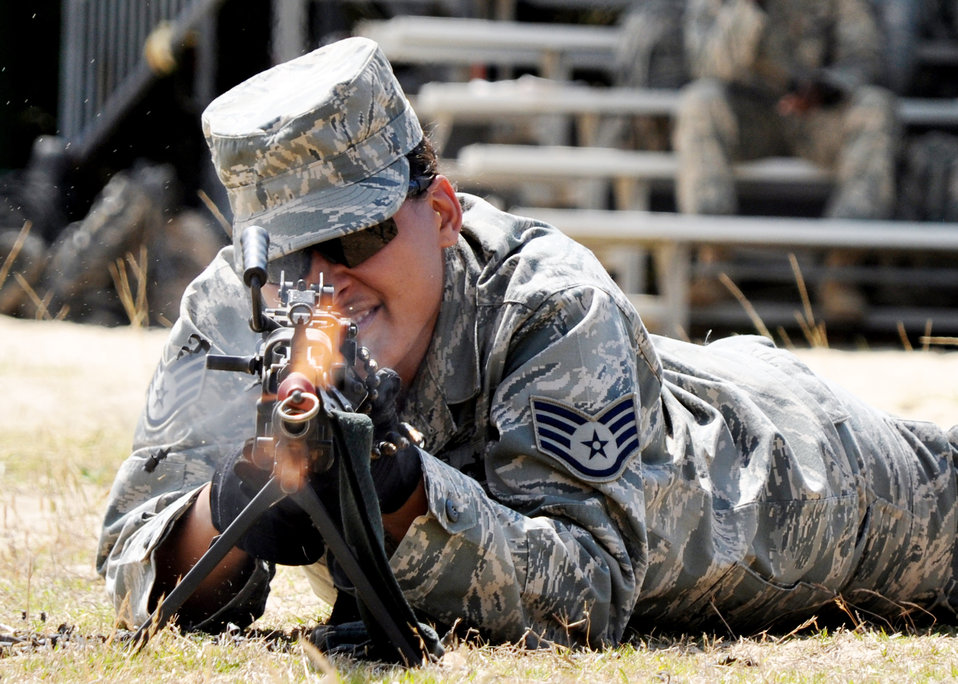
Brave Defender training

A security forces Airman fires blanks from an M249 machine gun during the weapons familiarization portion of Brave Defender training April 22, 2010. at Eglin Air Force Base, Fla.